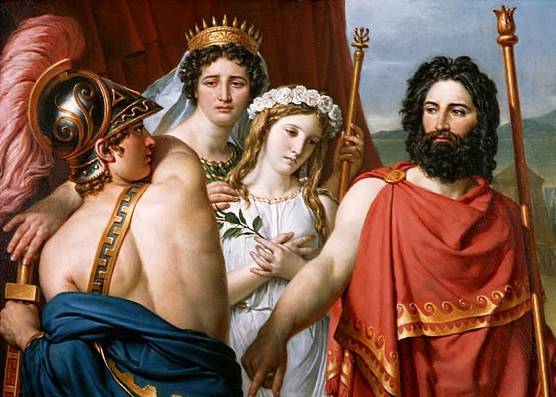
Anger of achilles